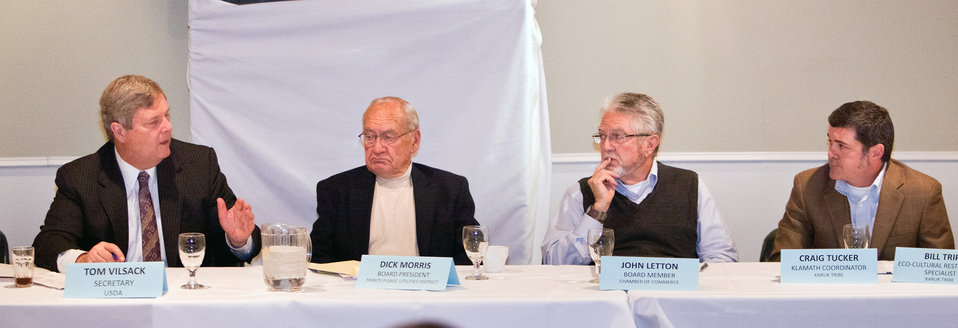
Agriculture Secretary Tom Vilsack addresses a community roundtable in Weaverville, CA on Dec. 10, 2012. (L to R Secretary Vilsack, Board President Trinity Public Utilities District Dick Morris, Board Member of Weaverville Chamber of Commerce John Letton, and Karuk Tribe Klamath Coordinator Craig Tucke).